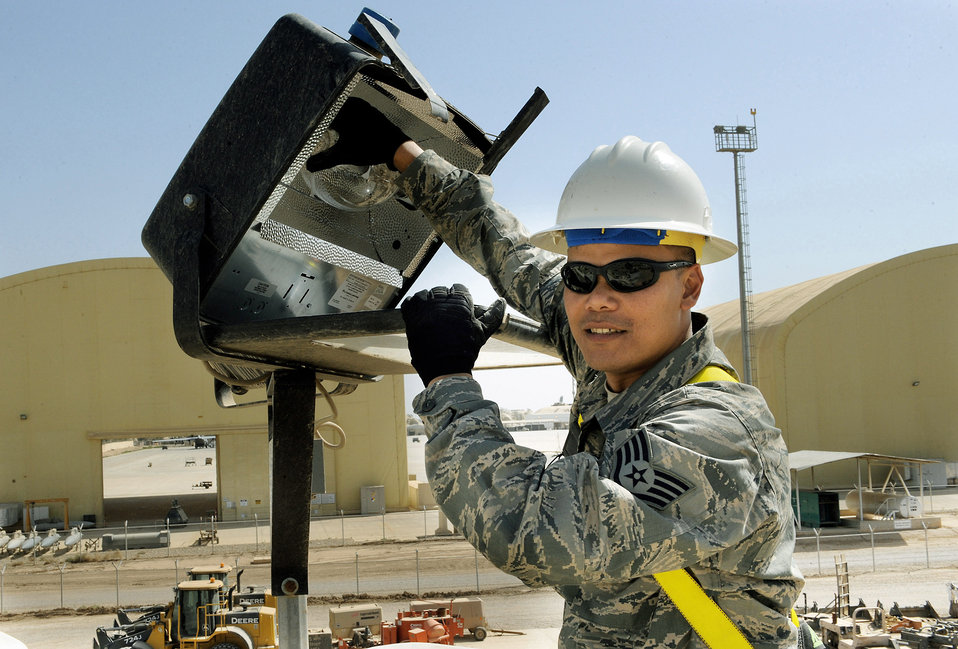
Shine a light

Staff Sgt. Arturo Quinones changes a bulb in a security light March 7 at Joint Base Balad, Iraq. He is a 332nd Expeditionary Civil Engineer Squadron electrical systems craftsman, and deployed from Misawa Air Base, Japan.